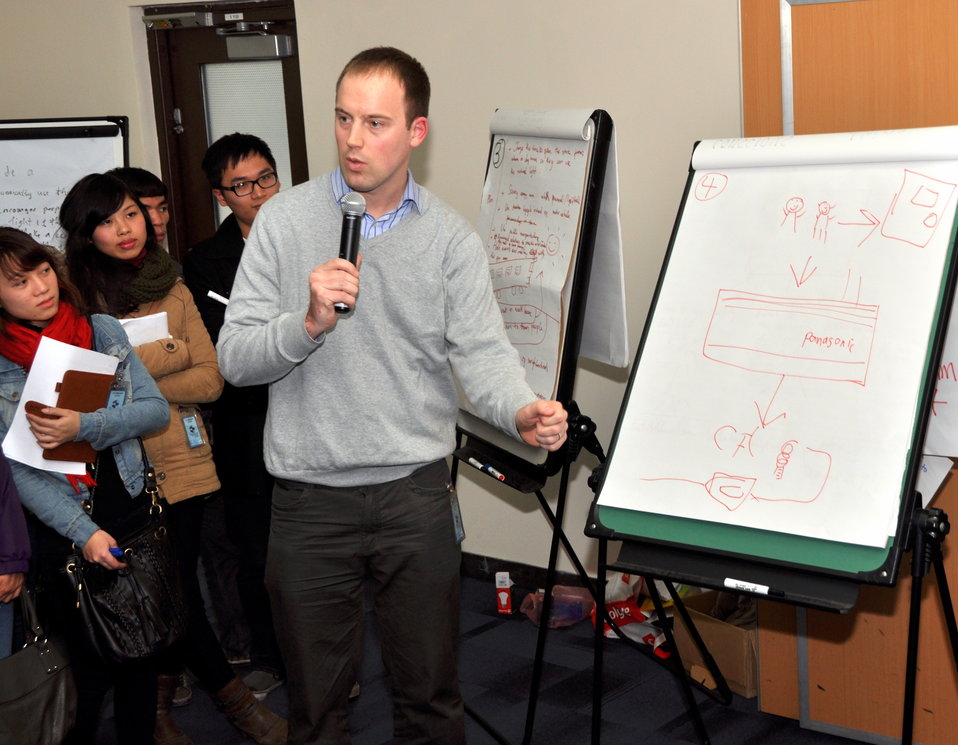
Speaker program on Climate Change and Clean Energy at the American Center

Hanoi, January 16, 2013